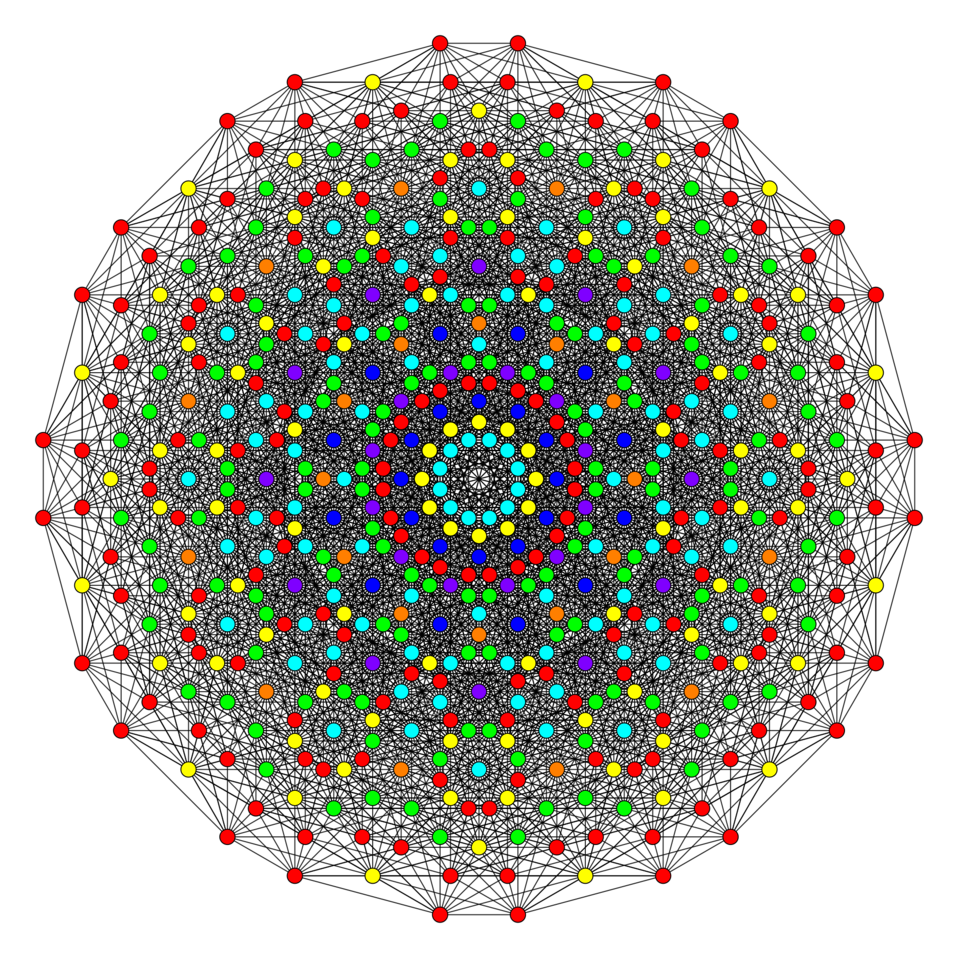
1 42 polytope in E6 Coxeter plane projection, vertices colored by directional overlap, with red,orange, yellow, green, cyan, blue, purple for 8,16,24,32,48,64 and 96 vertices respectively.